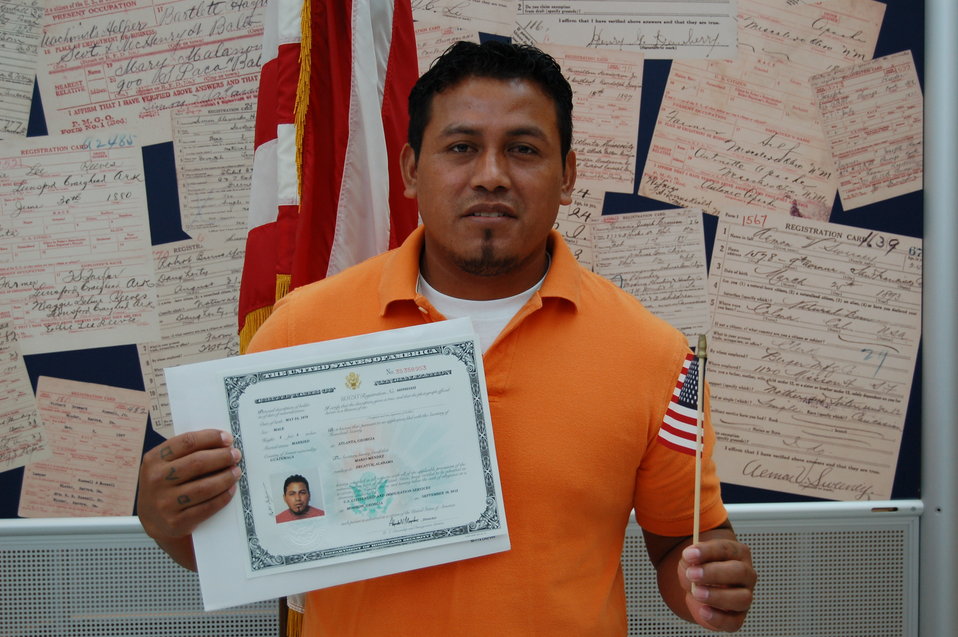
New Citizens